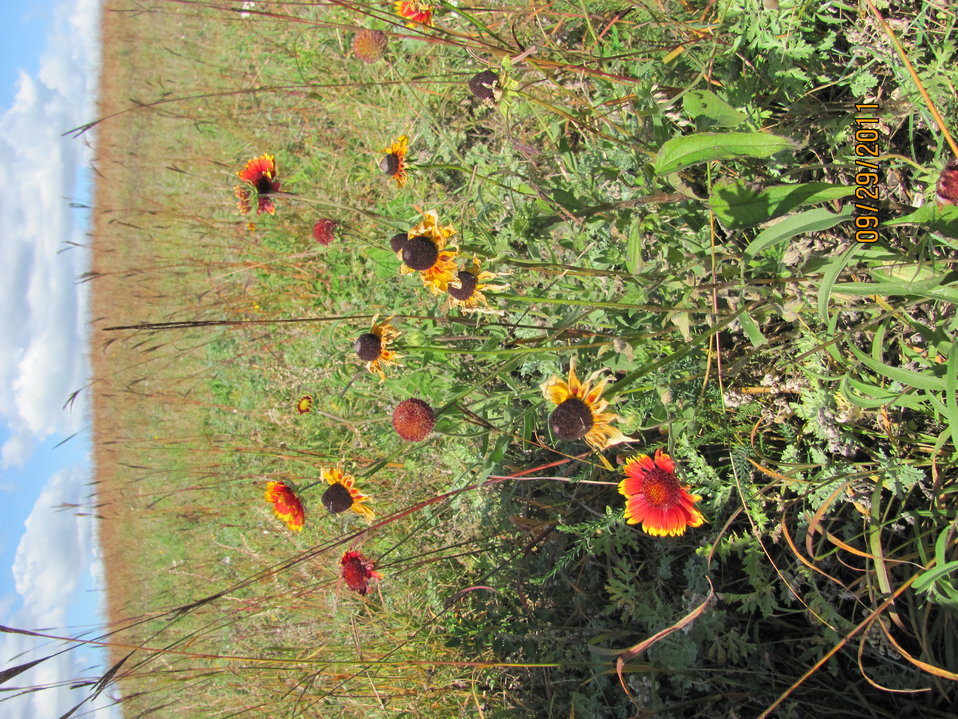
Blanket Flower (Gaillardia aristata) is a fairly common upland prairie flower. It is an Aster (family: Asteraceae). This specimen was found on the Woodworth Station, growing with Black-eyed Susan and Big Bluestem.